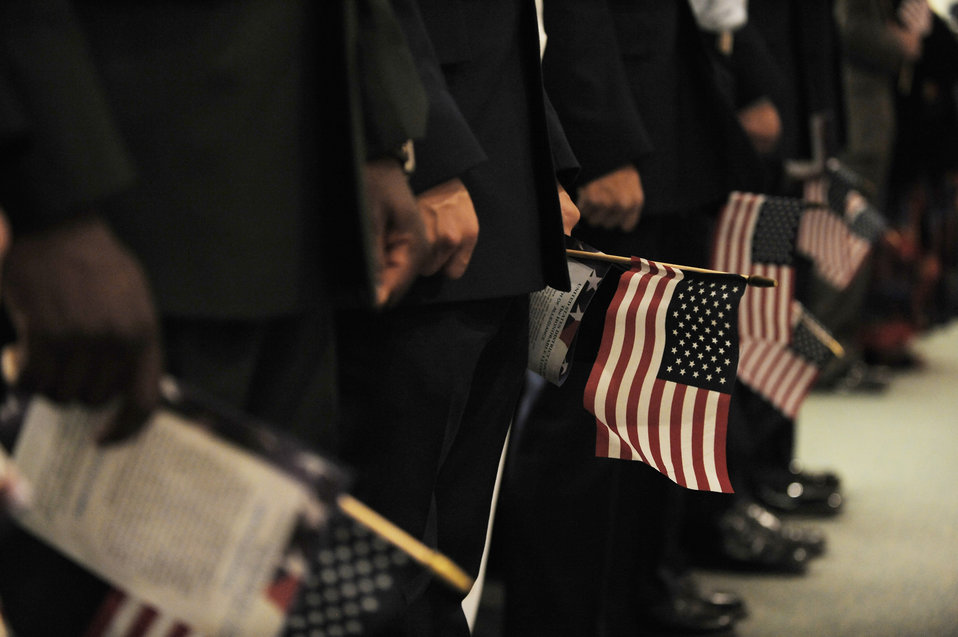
Nellis welcomes newest citizens during Freedom Fest

Eleven servicemembers wait to be sworn in during a naturalization ceremony July 4 at a Freedom Fest celebration in Nellis Air Force Base, Nev. The applicants included members of the Air Force, Army, Navy Reserve and Coast Guard. Members hailed from Armenia, Cameroon, Colombia, Mexico, the Philippines and South Korea.